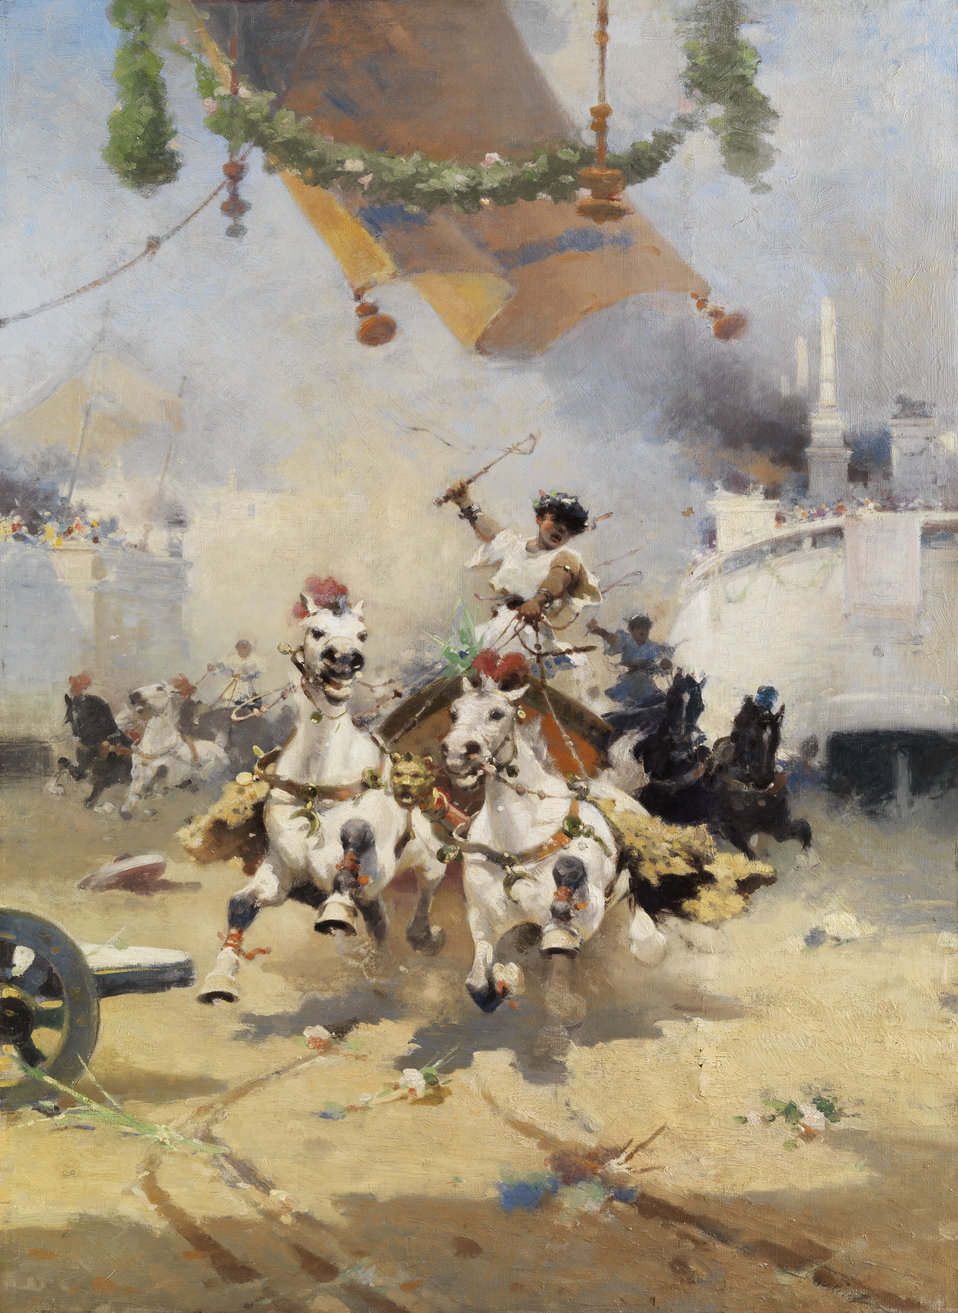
Alfredo Tominz Biga-Rennen in der römischen Arena 1904